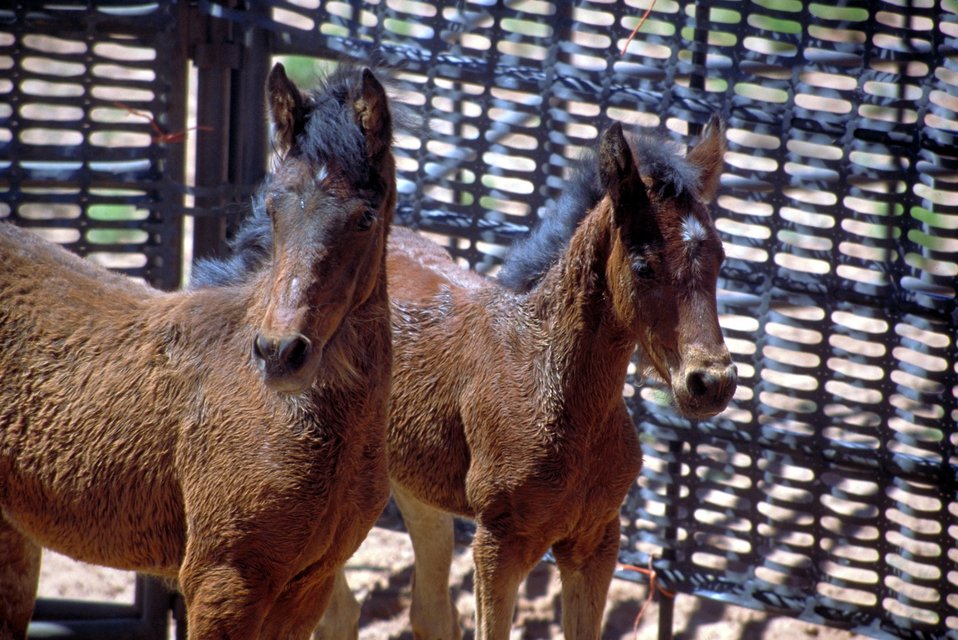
Wild horse gather, San Rafael Swell.